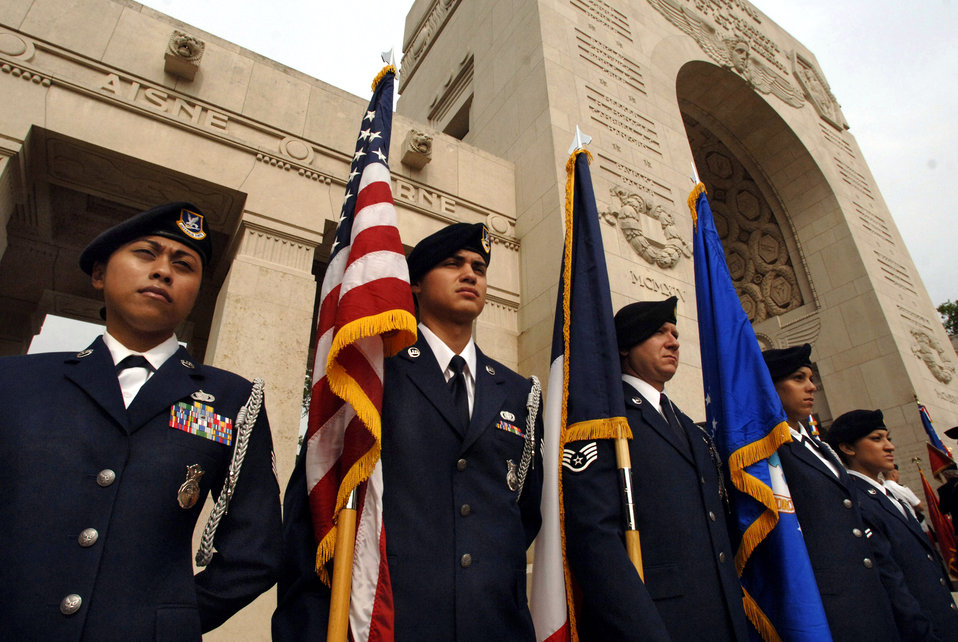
Early aviators memorialized

An Air Force honor guard participates in a ceremony at the Lafayette Memorial outside Paris to pay homage to the United States' first combat aviators who comprised the Lafayette Escadrille. The all-American squadron of volunteers flew under the French flag during World War I where many gave their lives. The Honor Guard detail is assigned to the 435th Security Forces Squadron, Ramstein Air Base, Germany.